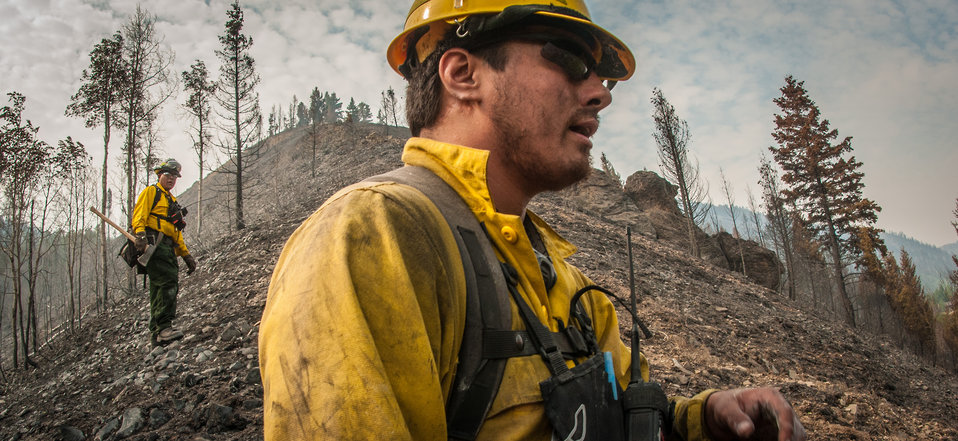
Department of the Interior, Indian Affairs (BIA) Southern Plains Initial Attack Type 2 Crew Squad Boss Trainee Bobby Robedeaux, of the Pawnee, Ponca and Otoe tribes, traverses a burned out hillside, looking and feeling for hotspots above and below the ground, during the Beaver Creek Fire, west of Hailey, ID, in the interface between U.S. Department of Agriculture (USDA) Forest Service (FS) and Sawtooth National Forest and Bureau of Land Management (BLM) lands, on Wednesday, Aug 21, 2013.